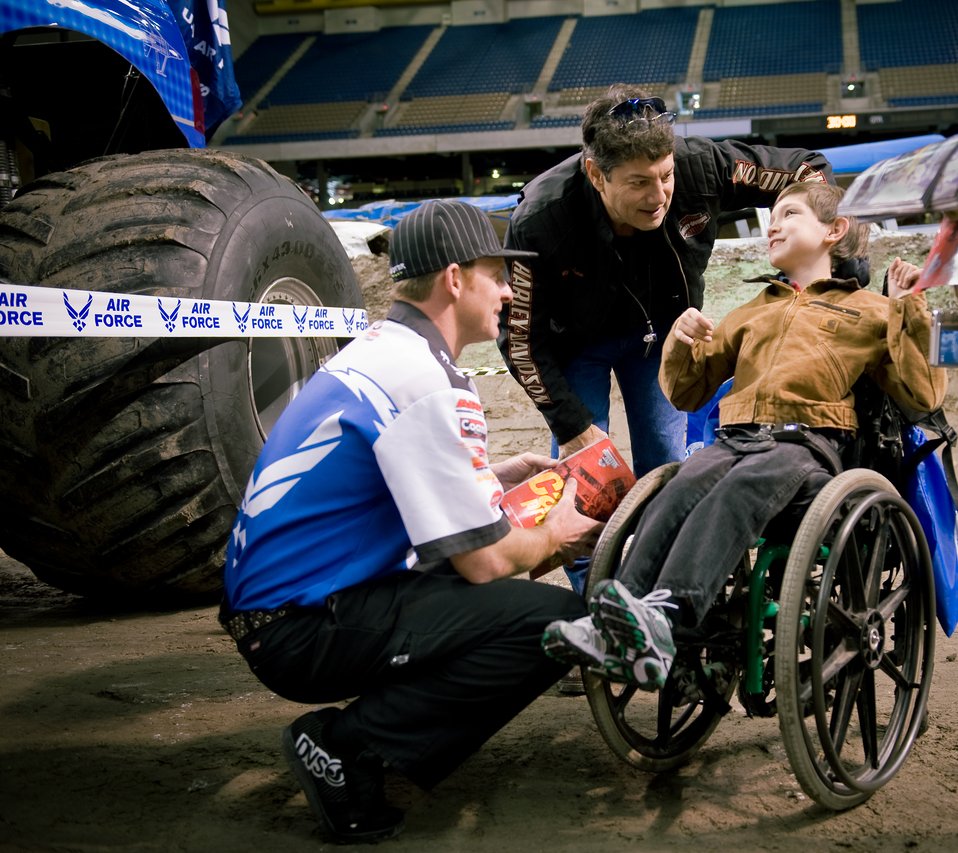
AF flies high at Monster Jam

Air Force monster truck driver Damon Bradshaw (left) chats with Christopher Jackson Jr. and his father during a 2009 Monster Jam pre-competition event Jan. 11 at the Alamodome in San Antonio. Later in the afternoon, 16 monster trucks, including Mr. Bradshaw driving Afterburner, competed head-to-head in a timed event and a freestyle event. Mr. Bradshaw took second with fast lap times and freestyle performances that had the crowd of approximately 45,000 up and cheering. Afterburner's 540 cubic-inch Merlin supercharged racing V-8 engine churns out 1,425 horsepower. Mr. Bradshaw, in his 3rd season, demonstrated that he had mastered the application of power by launching the 10,000-lb vehicle more than 40 feet in the air, thrilling the crowd. Afterburner is equipped with 66